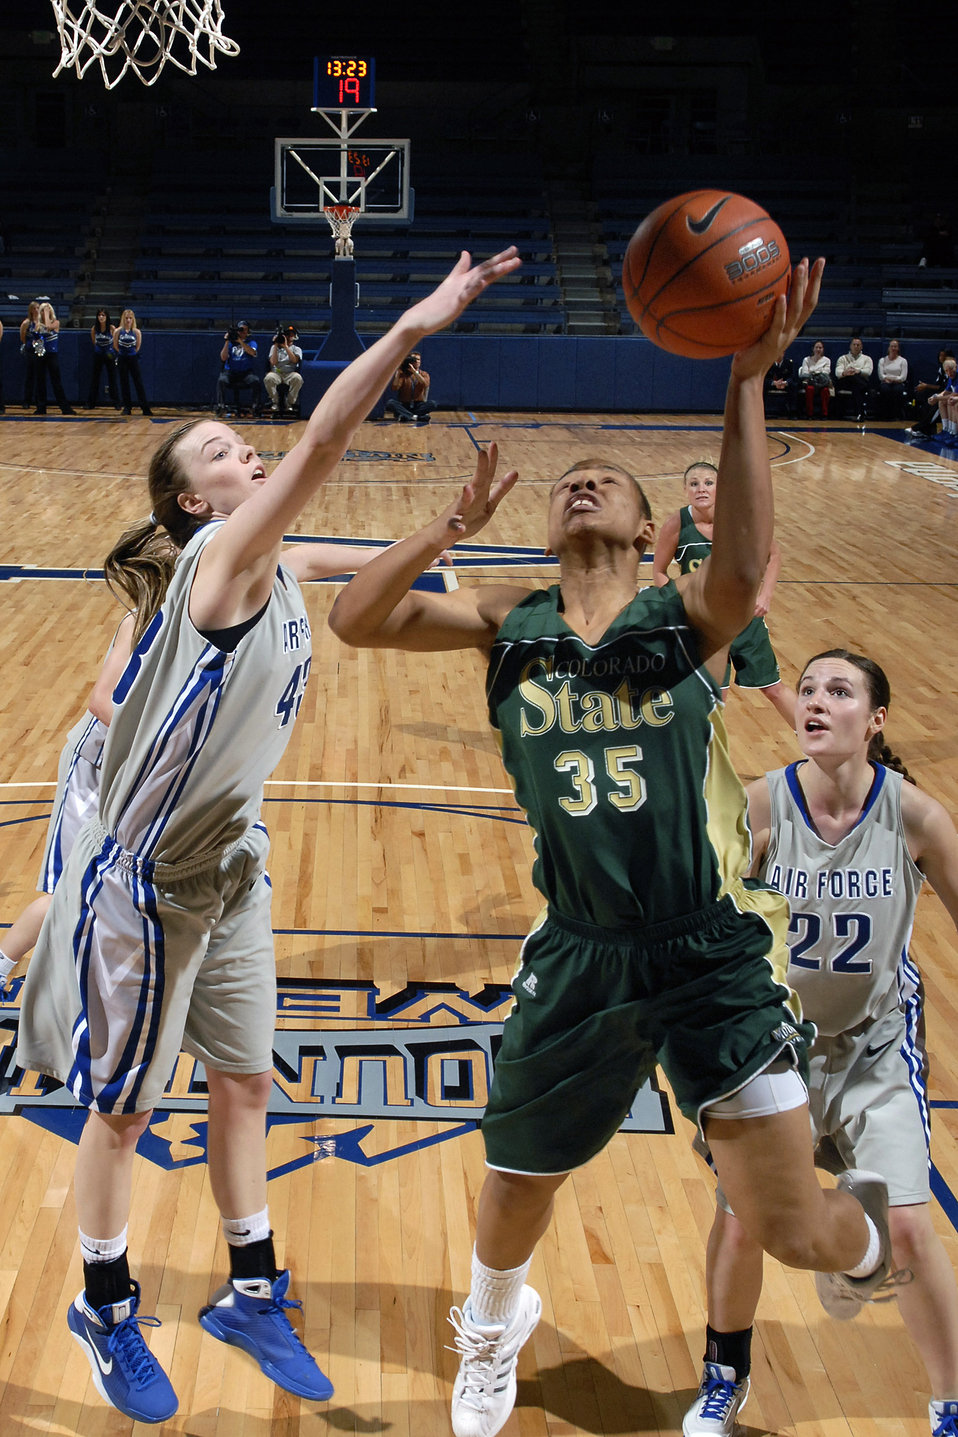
Women Falcons lose 55-50 to Colorado State

Senior center Kim Kreke attempts to block a shot by Colorado State University's Juanise Cornell during the Falcons 55-50 loss to the Colorado State Rams Jan 20 at Clune Arena at U.S. Air Force Academy, Colo. Kreke notched her sixth double-double of the season with 10 points and 14 rebounds The Falcons dropped to 0-5 in Mountain West Conference action and 4-14 overall.